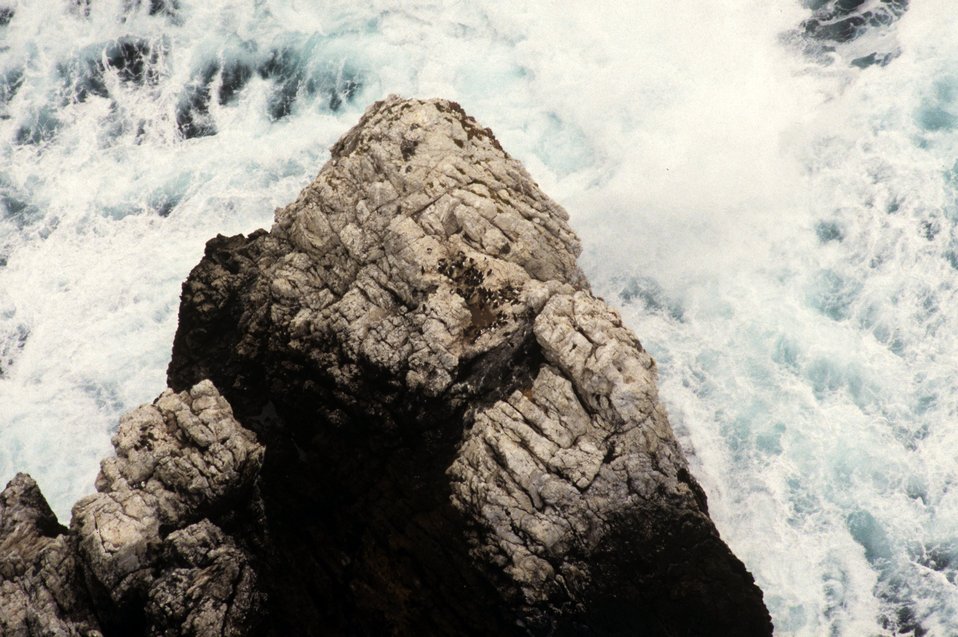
Looking down on Hurricane Point murre colony